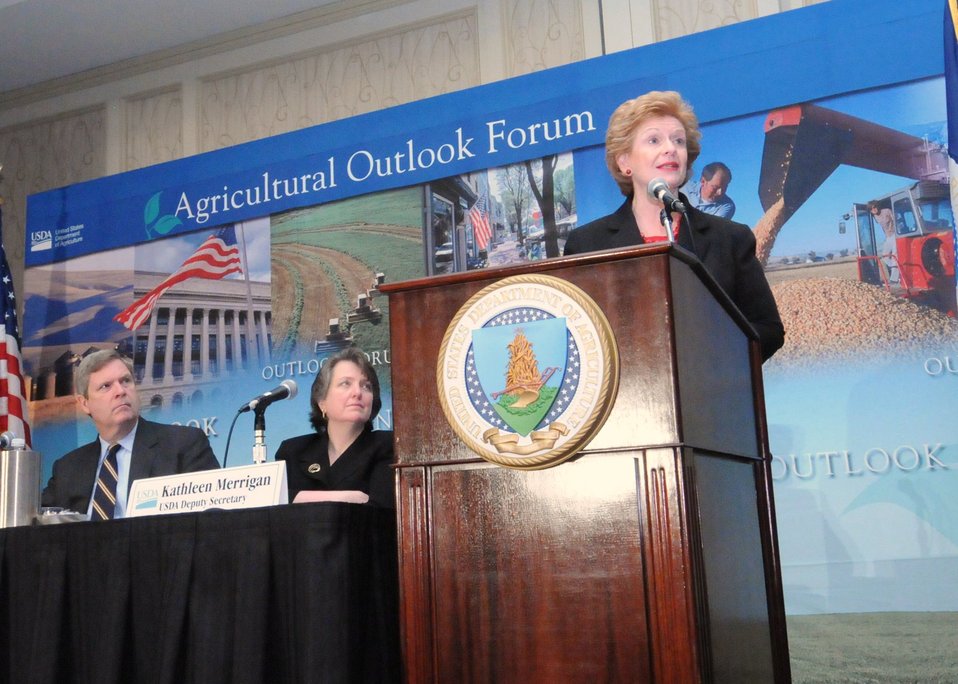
Michigan Senator Debbie Stabenow, Chairwoman of the Senate Committee on Agriculture, Nutrition and Forestry, was a distinguished speaker at the World Agriculture Outlook Board Forum held in Arlington, VA, on Thursday, February 24, 2011. Left to right seated are Agriculture Secretary Tom Vilsack and Deputy Secretary of Agriculture Kathleen Merrigan.